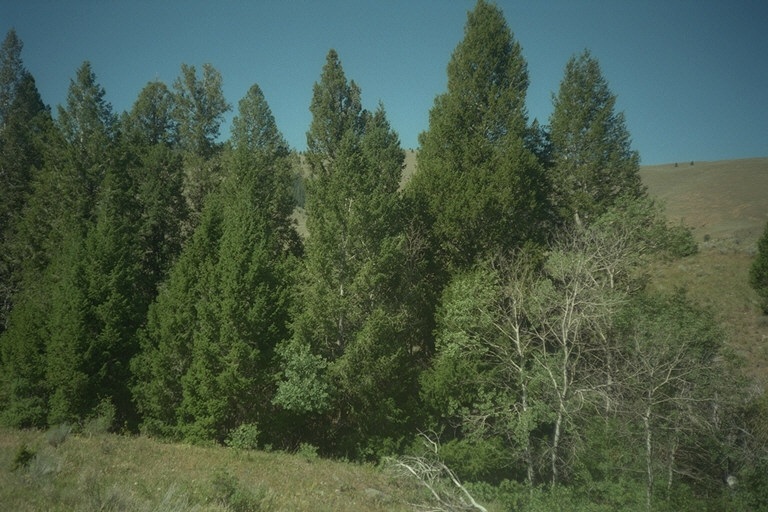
Riparian area Public Lands Salmon Field Office UCSC Upper Columbia Salmon Clearwater District